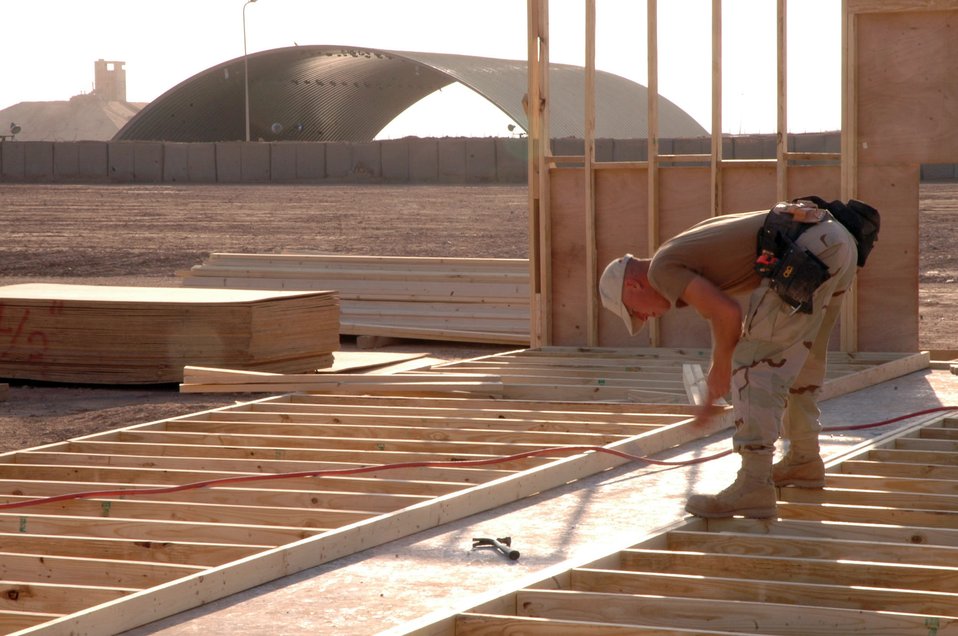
Airmen build Army post

FORWARD OPERATION BASE QAYYARAH WEST, Iraq (AFPN) -- Senior Airman Jesse Gent drives in a nail on a new building project here. Airman Gent is a structural journeyman with the 557th Expeditionary Red Horse Squadron.